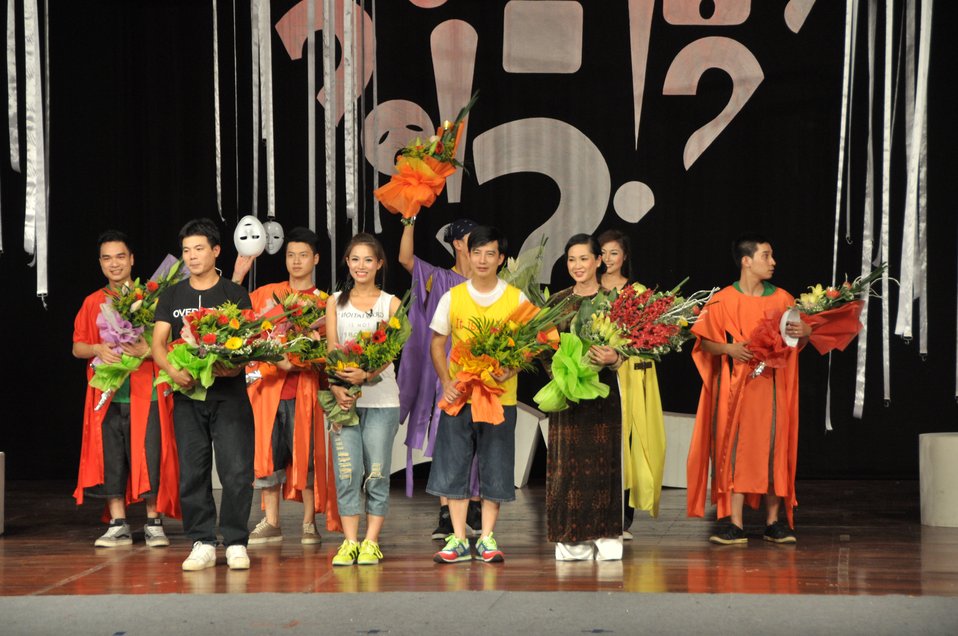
PEPFAR Musical Questions and Exclamations